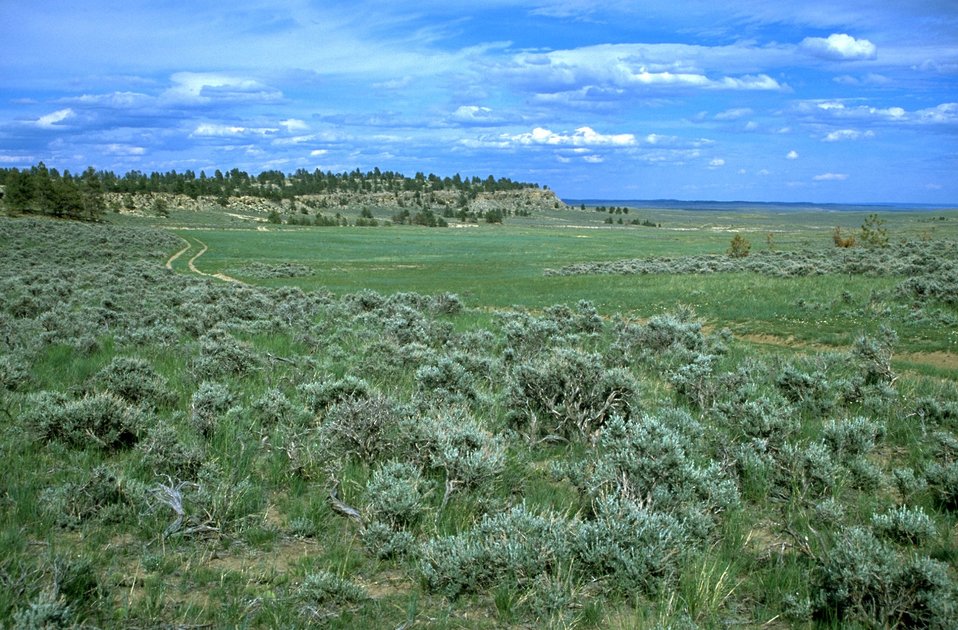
Sagebrush and grassy area in the Acton Recreation Area